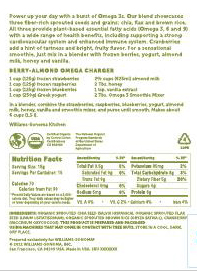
RECALLED – Sprouted Chia Seed Powder Products

June 6, 2014 – Product Recall – Navitas Naturals Expands Voluntary Recall for Organic Sprouted Chia Powder Products.